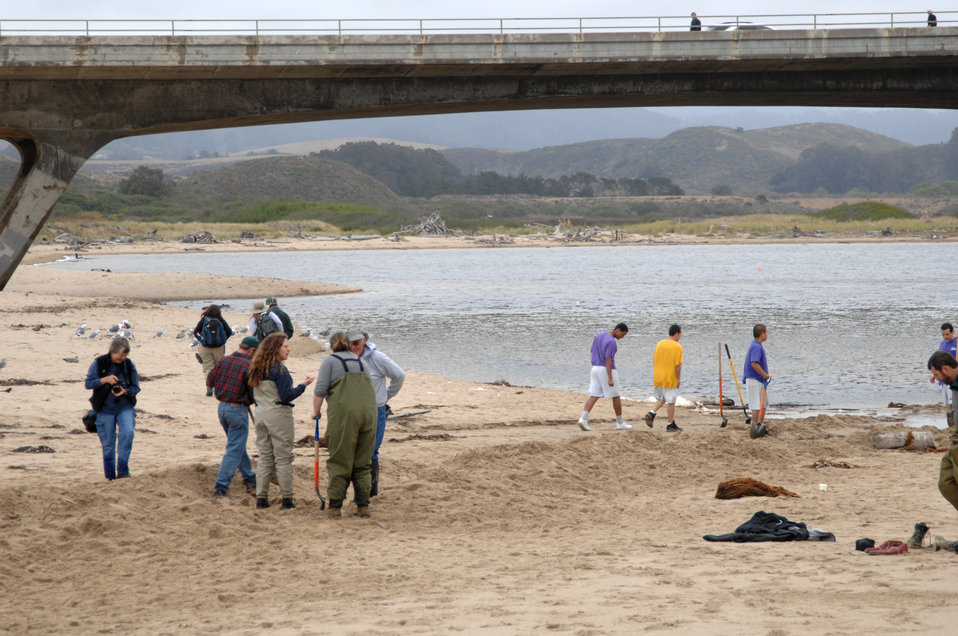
Pescadero Breach 12